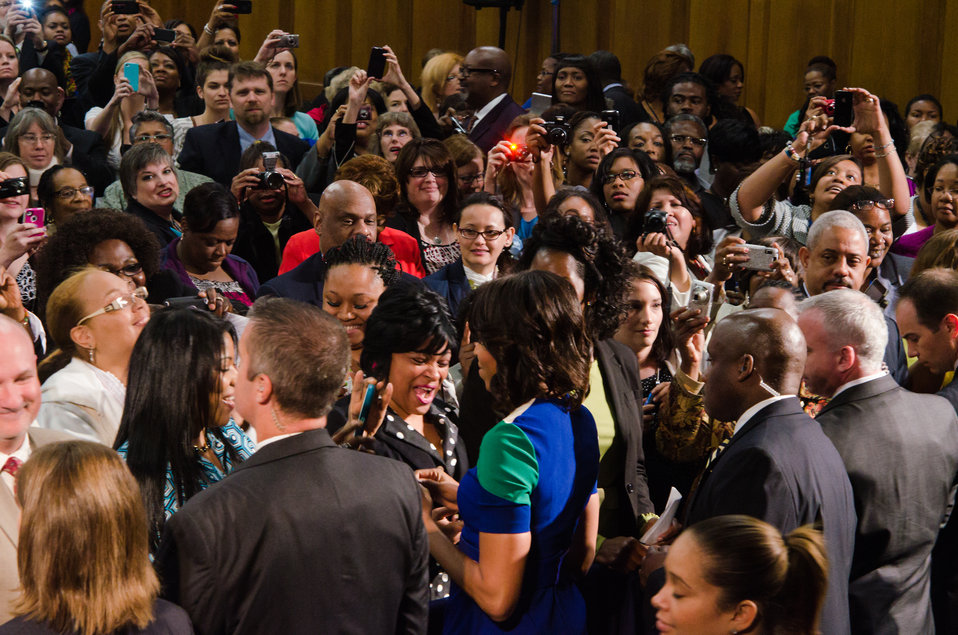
First Lady Michelle Obama shakes hands with employees after visiting the U.S. Department of Agriculture (USDA) to thank employees for their service and dedication in Washington, D.C. on Friday, May 3, 2013. The First Lady reminded federal workers of the importance of the work they do to support American farmers and ranchers, protecting the environment, lifting up rural communities, and keeping food safe, and working to end hunger.